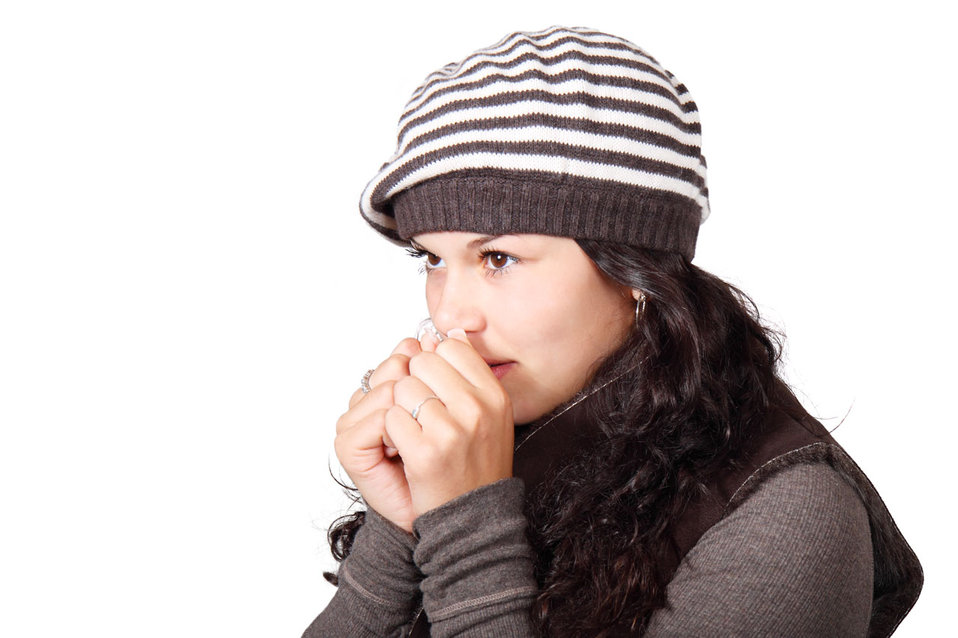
Cold winter time

Young woman being cold isolated on white background.